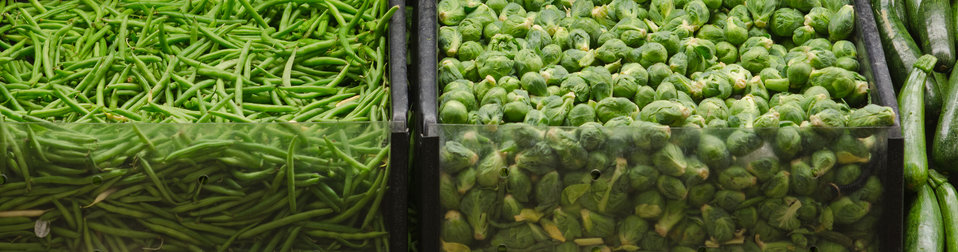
Brussel sprouts and other produce at a grocery store in Fairfax, Virginia, on March 3, 2011.